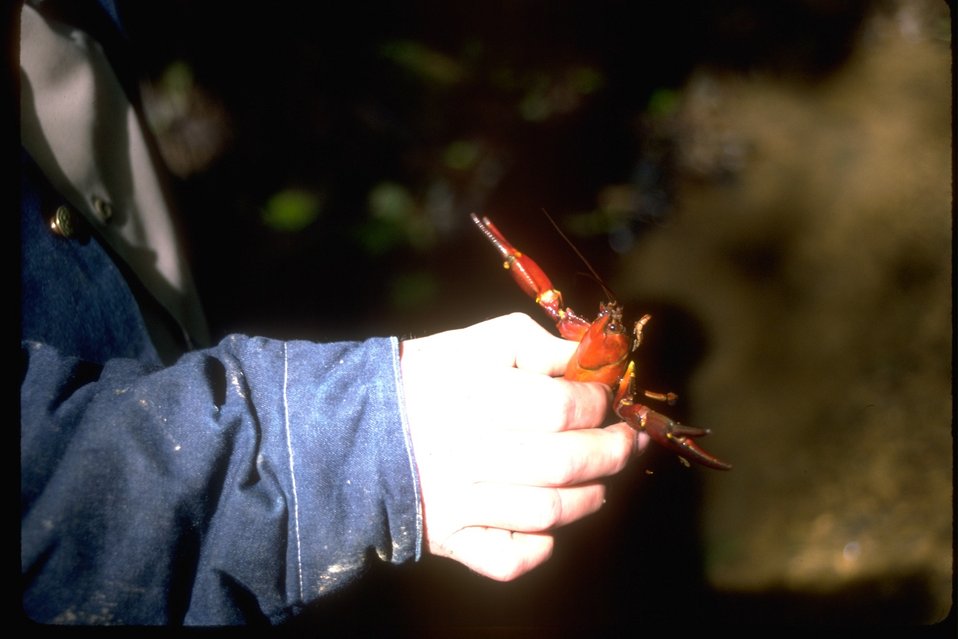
Child holds Crawfish from the Siuslaw River.